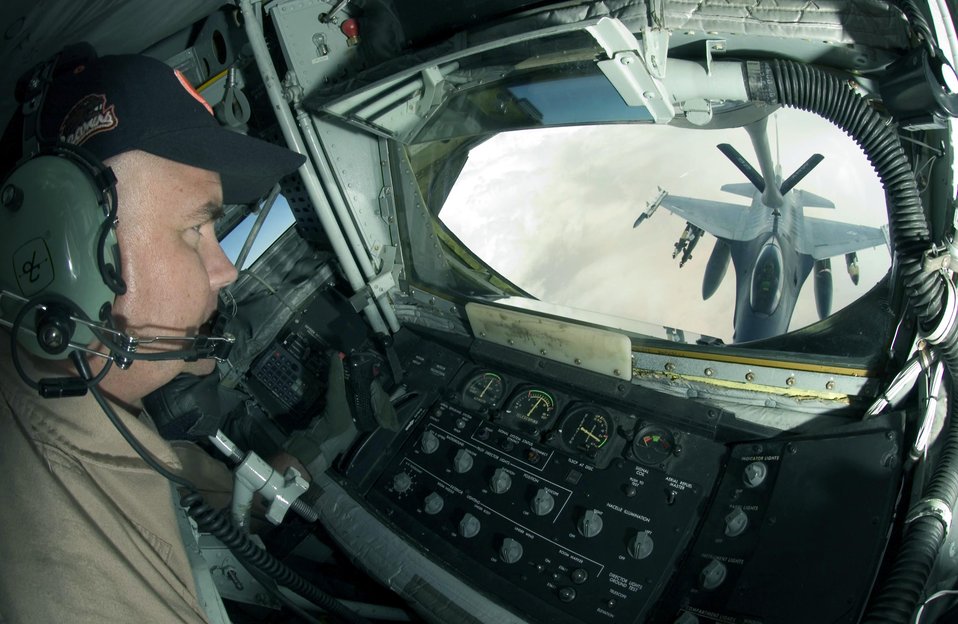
Lowering the boom

OVER IRAQ (AFPN) -- From a KC-135 Stratotanker, Tech. Sgt. John Baughman refuels an F-16 Fighting Falcon during a recent mission supporting Operation Iraqi Freedom. Sergeant Baughman is a boom operator deployed from the 92nd Air Refueling Squadron at Fairchild Air Force Base, Wash. The F-16 is assigned to the 555th Fighter Squadron at Aviano Air Base, Italy.